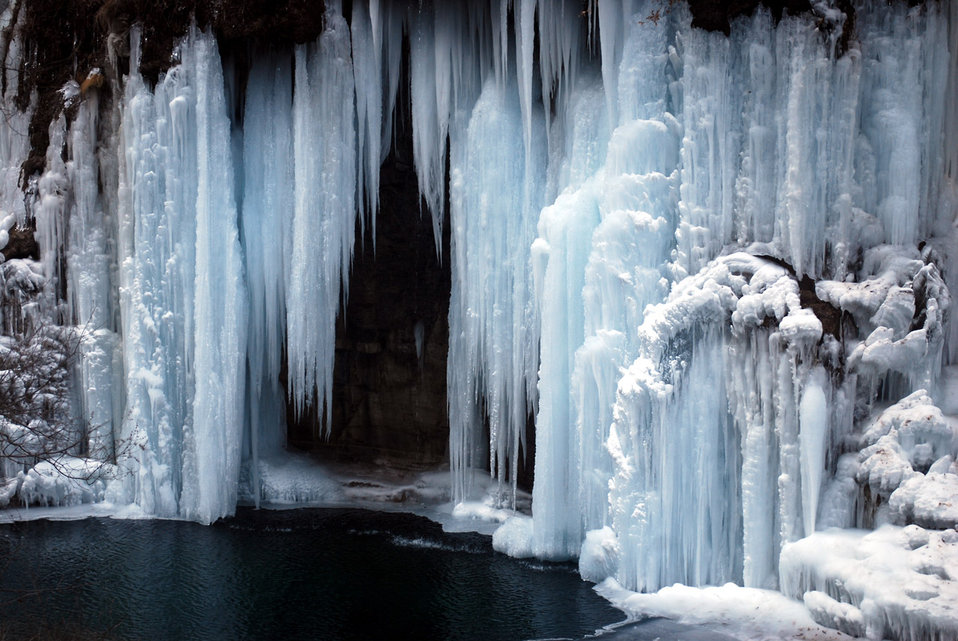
Frozen waterfall

Waterfall iced up during this freezing day.